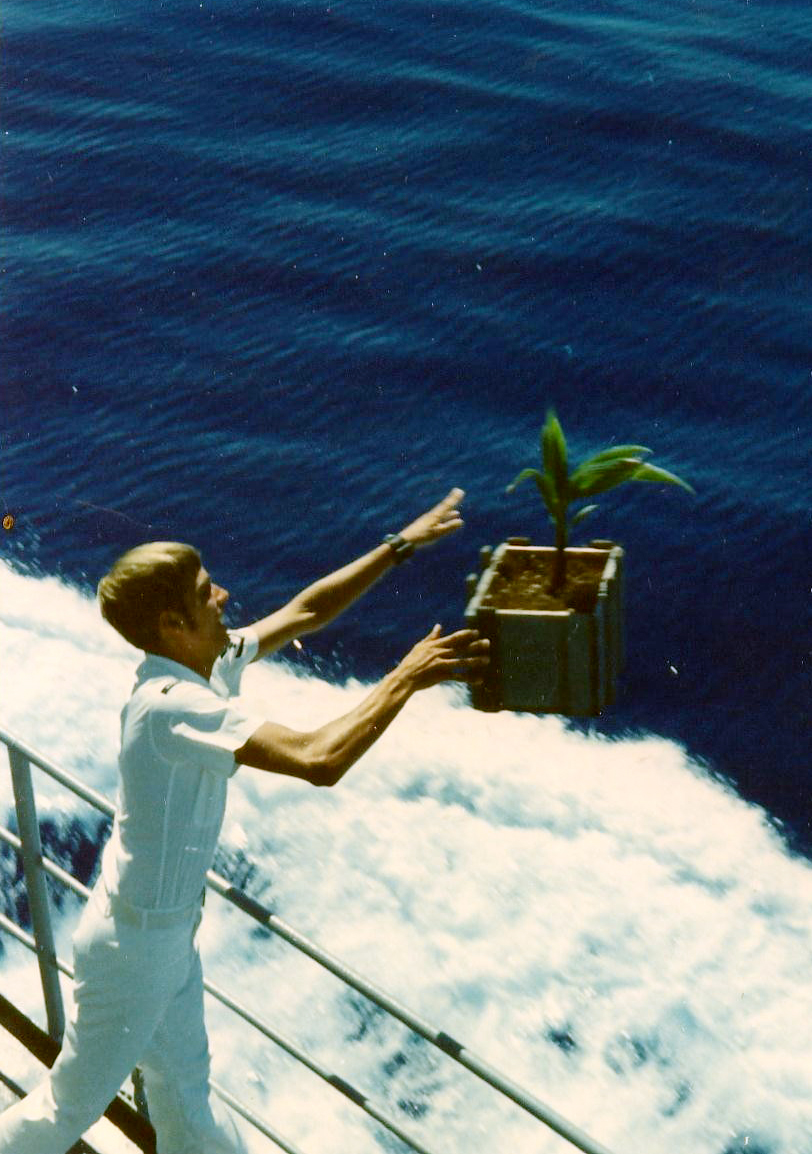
Rick Jorgensen, a Course Leader with the Conservation Land Management Branch at the National Conservation Training Center, sent this photo of him in the Navy dress whites of an E-4 (third class petty officer) on the USS Sarsfield, DD837. On their return from the West Pacific in 1972, Rick says, “We were coming into Pearl Harbor and the CO required us to comply with quarantine rules to dispose of all organics obtained offshore U.S.” He adds that he had cultivated that coconut palm “from a nut picked in Guam and reared in a 30 cal ammo box all over the Pacific Theater in coffee grounds. It was sort of the ship’s mascot.” He was stationed at Mayport, Florida, from 1971 to 1973, but did a tour in Vietnam as a Signalman. The Sarsfield provided gunnery support for land operations.